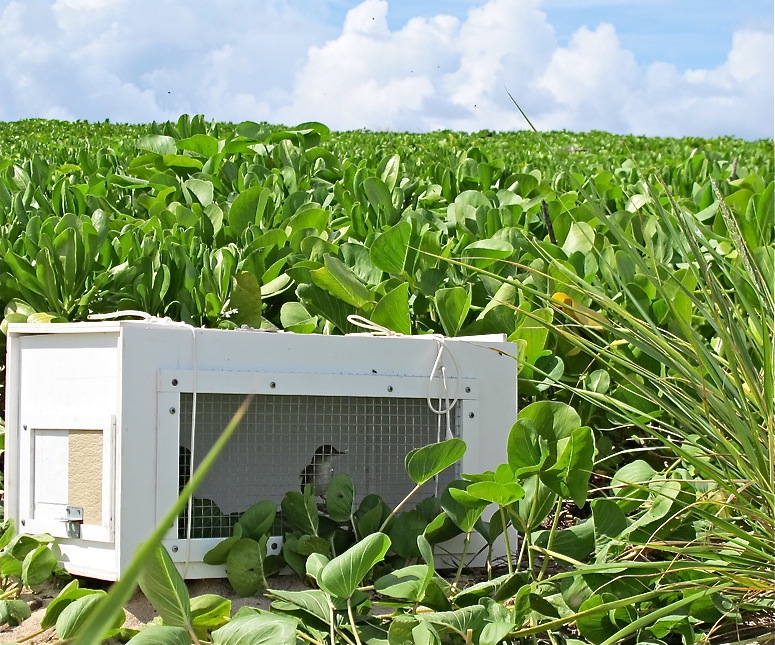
millerbird ready for release

Laysan Island
Sept. 10, 2011